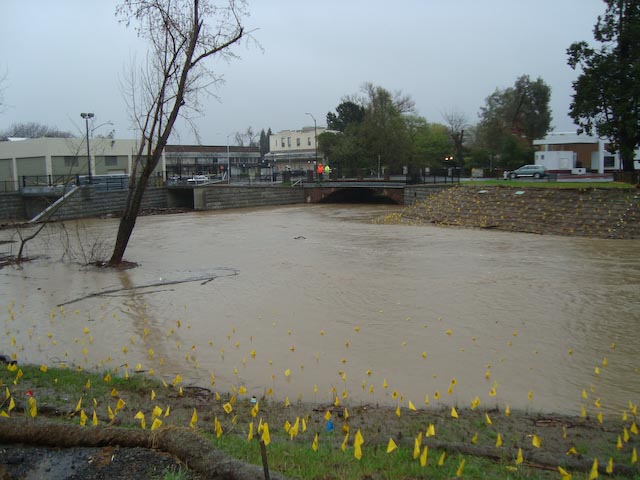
Napa rain storm tests new flood project

Napa Creek’s widened channel and recently completed box culverts (shown at left) were put to use as rain poured in downtown Napa, Calif., March 14, 2012. The culverts - tunnels large enough for a car to drive through - direct flood water out of Napa Creek and reroute it directly to the Napa River, reducing the chance that the creek will spill over into nearby neighborhoods. The work is part of the $14.8 million, American Recovery and Reinvestment Act of 2009-funded Napa Creek Project, a joint effort of the U.S. Army Corps of Engineers Sacramento District, the city of Napa, and the Napa Flood Control and Water Conservation District to reduce the flood risk for the city.